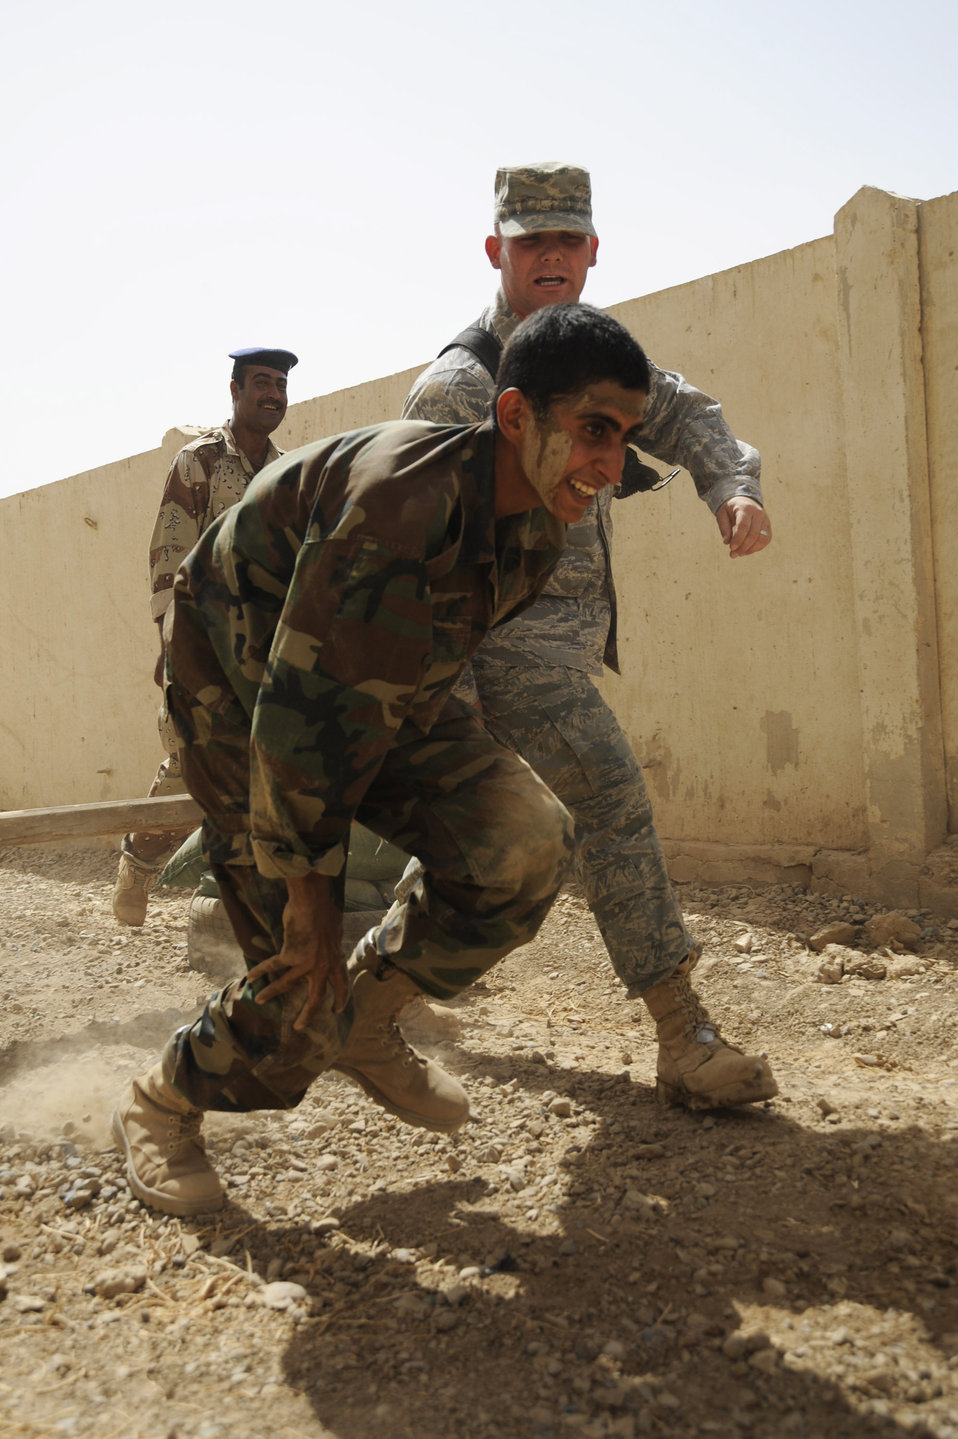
Training instructors build tactical course for Iraqi airmen

Staff Sgt. Matthew Coltrin motivates an Iraqi warrant officer as he runs the basic military training tactical course. Sergeant Coltrin and Tech. Sgt. Chris Ramsdell created the course with materials they found around at Al Taji Air Base, Iraq, Sept. 27. Sergeant Coltrin a military training instructor with the 370th Expeditionary Training Squadron.